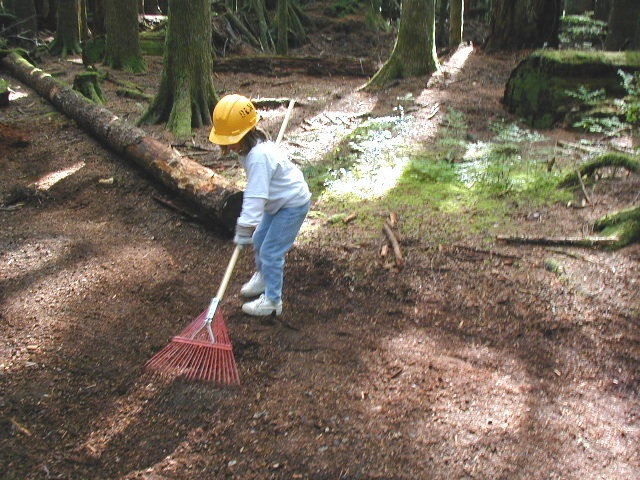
There was work for all ages